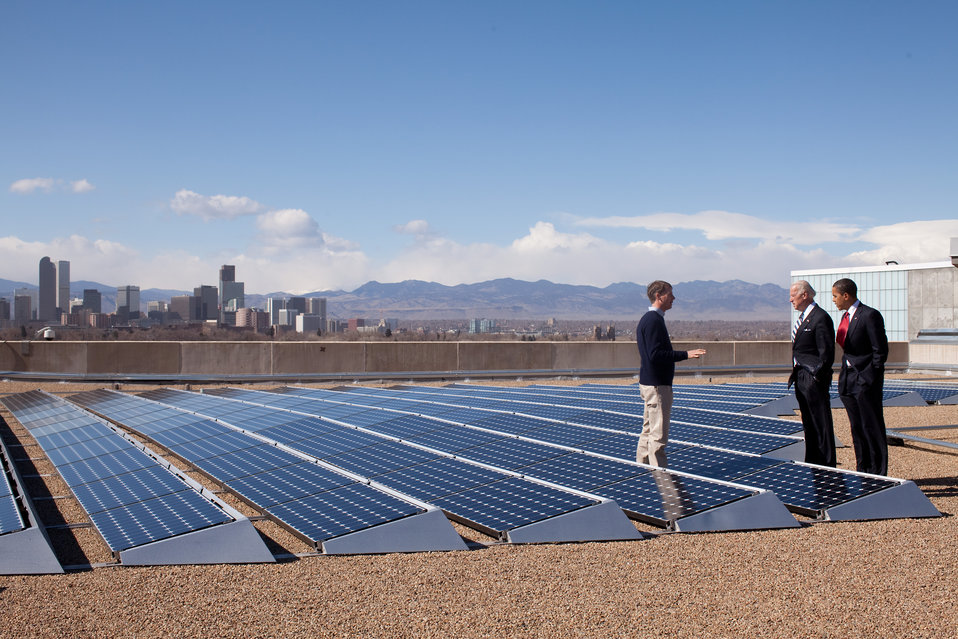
PRESIDENT OBAMA AND VICE PRESIDENT BIDEN SPEAK WITH CEO OF NAMASTE SOLAR ELECTRIC, INC., BLAKE JONES WHILE LOOKING AT SOLAR PANELS AT THE DENVER MUSEUM OF NATURE AND SCIENCE ON FEBRUARY 17,2009.